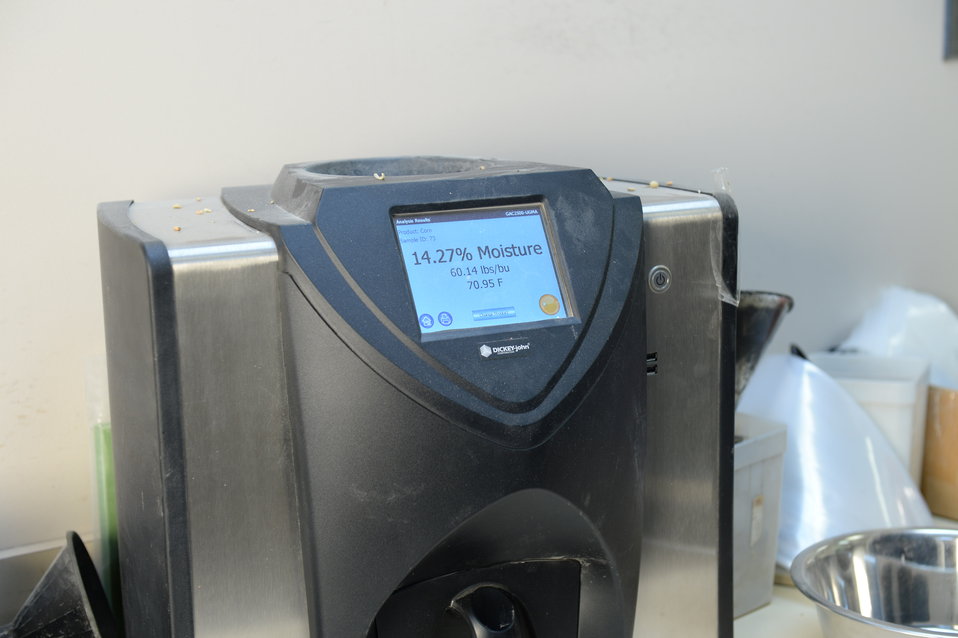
A U.S. Department of Agriculture (USDA) Grain Inspection, Packers and Stockyards Administration (GIPSA) Federal Grain Inspection Service (FGIS) scientist tests corn at the FGIS inspection laboratory in New Orleans, LA on Monday, Nov. 18, 2013.